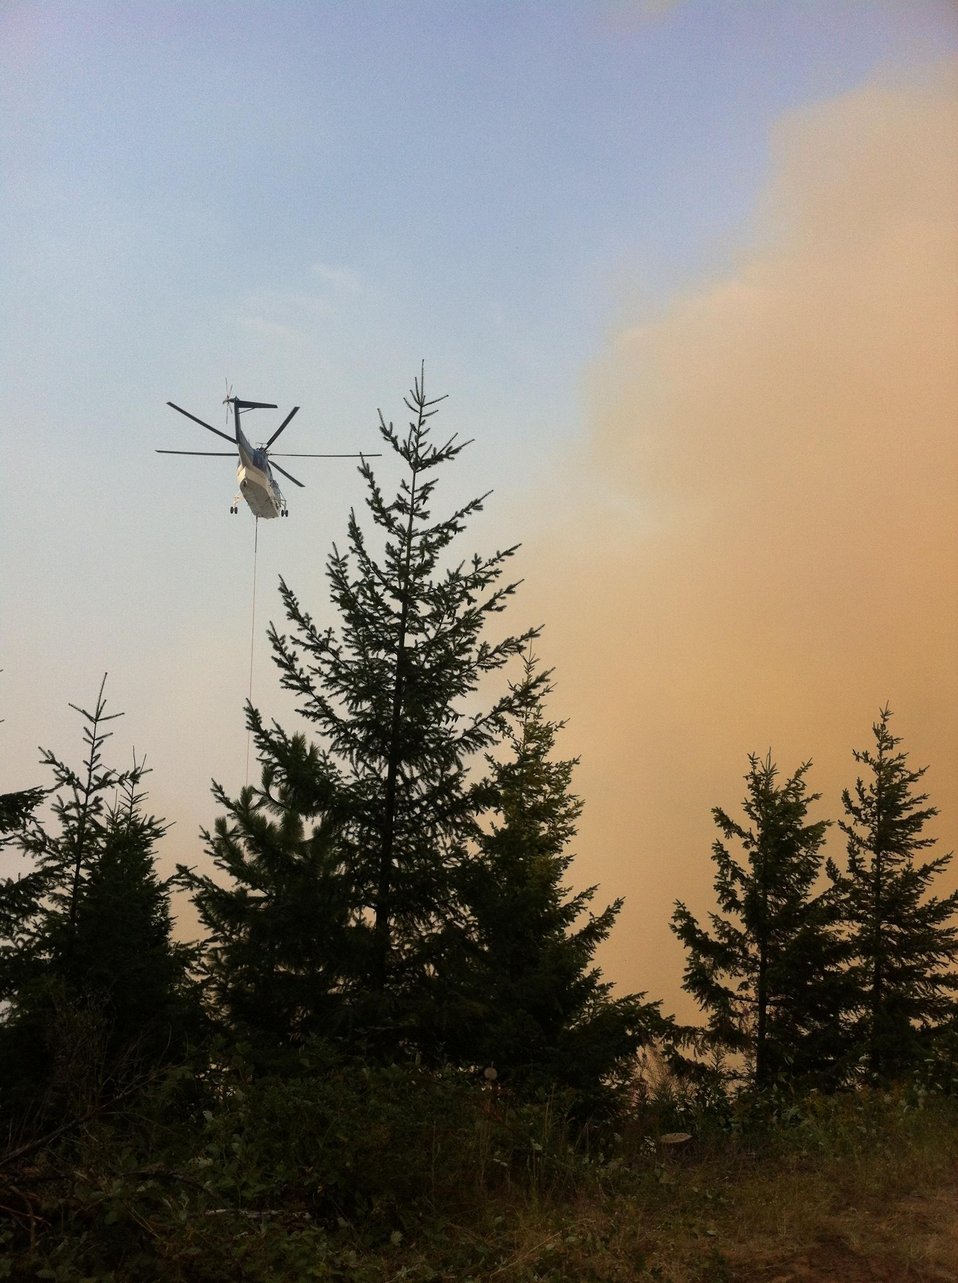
Helicopter prepares to make water drop on the Big Windy Complex Fire. The Big Windy Complex Fire consists of three fires: The Big Windy Fire, Calvert Peak Fire, and Jenny Fire (formerly the Windy 16 Fire) near Grants Pass, OR. The fires began on Jul. 26, 2013 by lighting have consumed approximately 15,358 acres and are 15% contained.